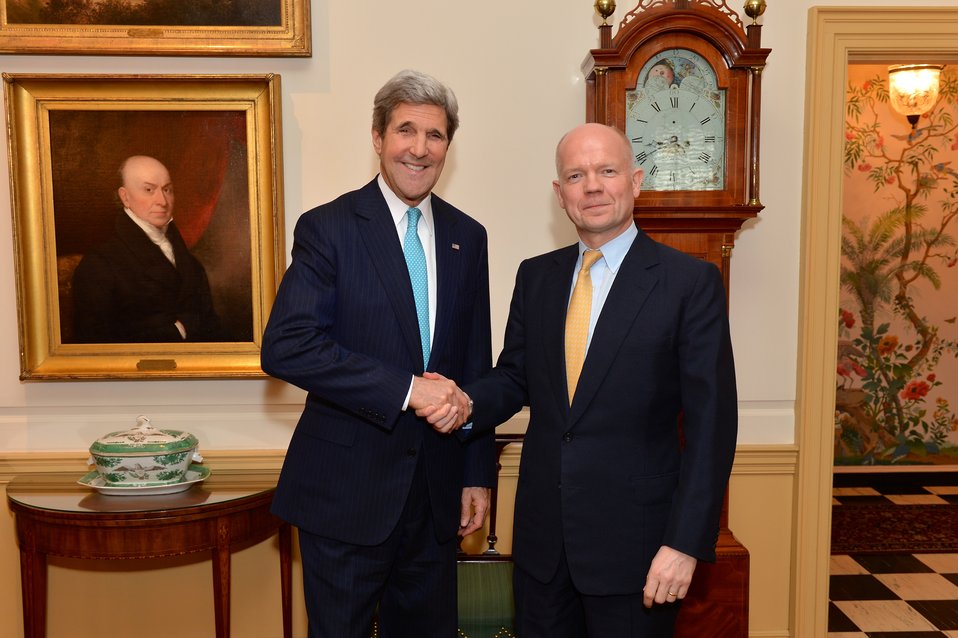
Secretary Kerry and U.K. Foreign Secretary Hague Pose for a Photo

U.S. Secretary of State John Kerry and U.K. Secretary of State for Foreign and Commonwealth Affairs William Hague pose for a photo before hosting a discussion on ending and preventing sexual violence in conflict situations at the U.S. Department of State in Washington, D.C., on February 25, 2014.